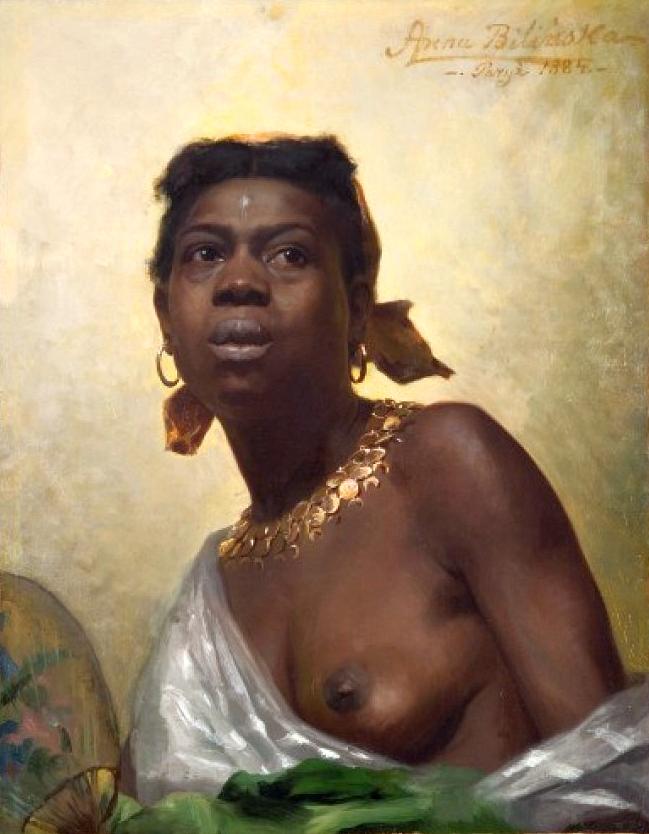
Bilińska Negress